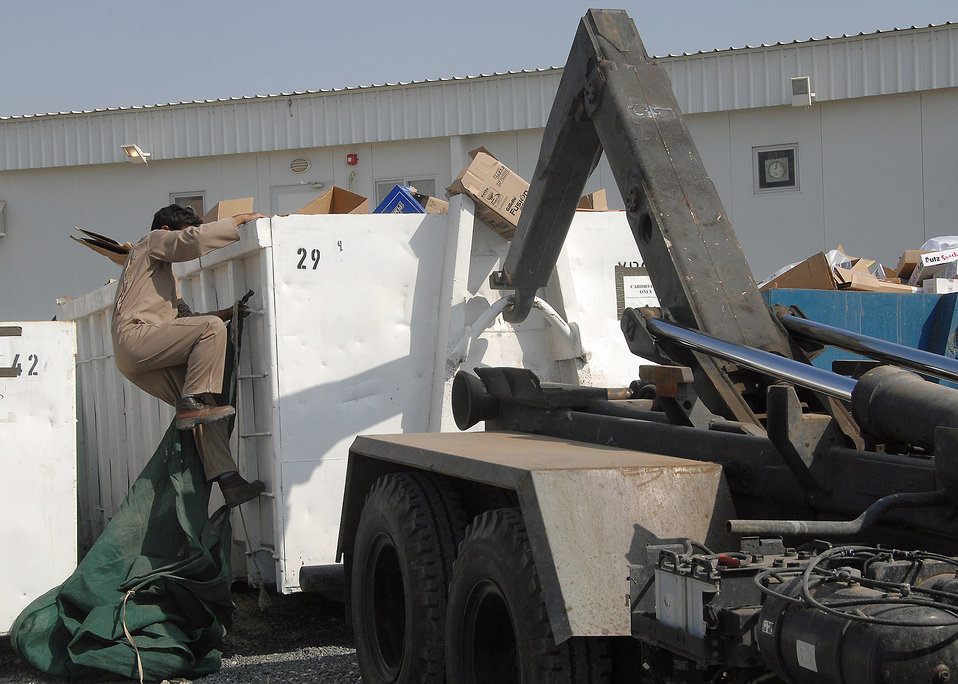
Air Force officials reduce waste with recycling program

A recycling company worker prepares to cover and haul away a cardboard recycling bin on Nov. 15 at an air base in Southwest Asia. Officials from the 386th Air Expeditionary Wing recycle various items, to include cardboard boxes and plastic bottles. The money that is generated through the recycling program goes back to the base populace for quality of life initiatives and morale, welfare and recreation programs.